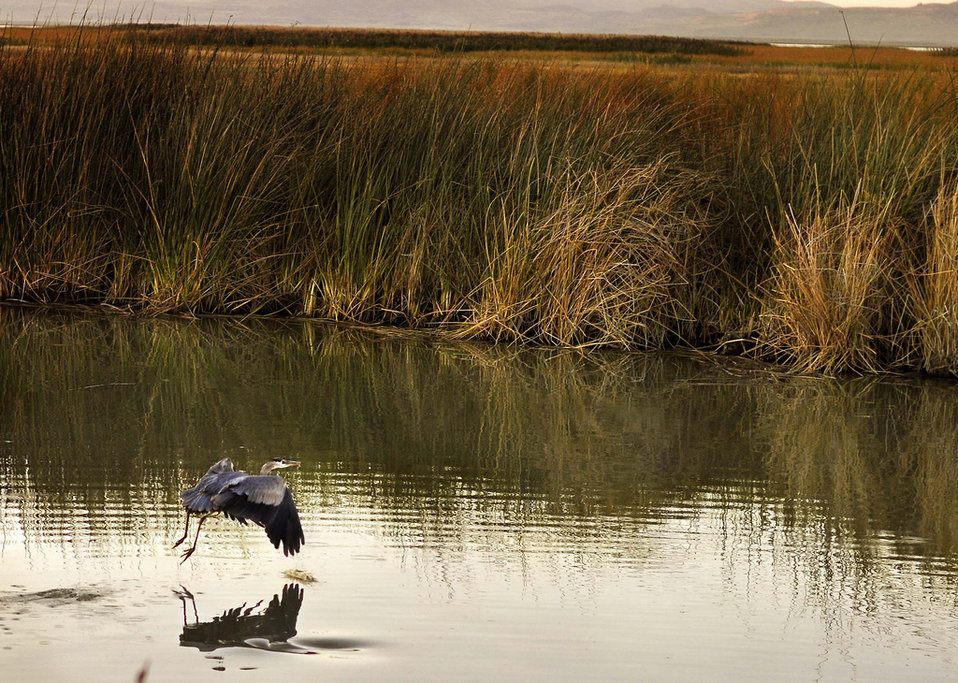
blue heron

Bear River Migratory Bird Refuge, UT